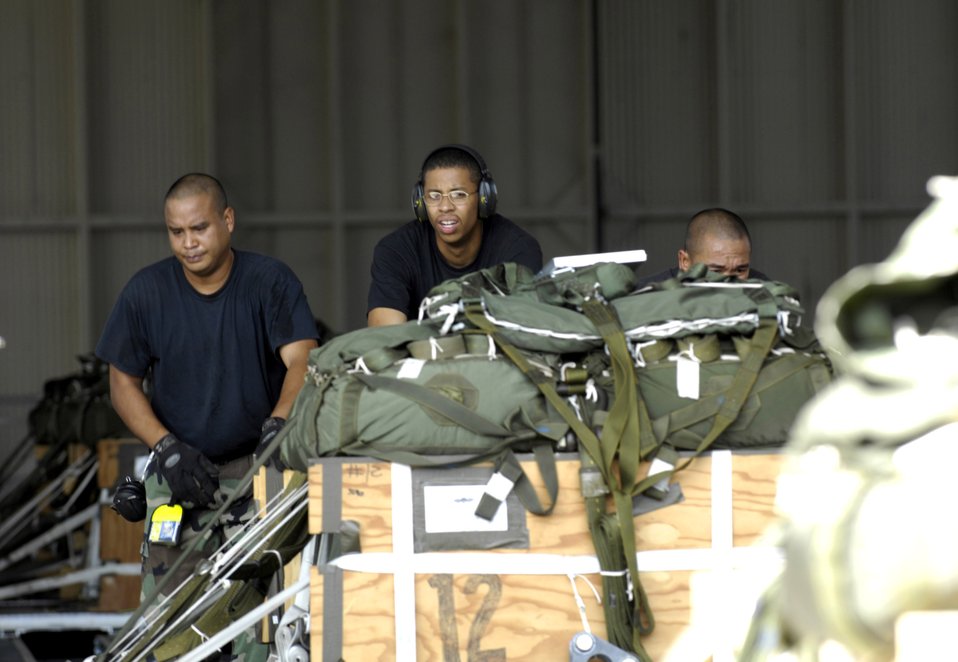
Chute riggers

Air transportation specialists load a practice airdrop bundle onto a K-Loader at Hickam Air Force Base, Hawaii, June 11. The Airmen are from the 15th Logistics Readiness Squadron Combat Mobility Element. The CME is responsible for packing and rigging all parachutes and practice bundles for airdrops at Hickam AFB.